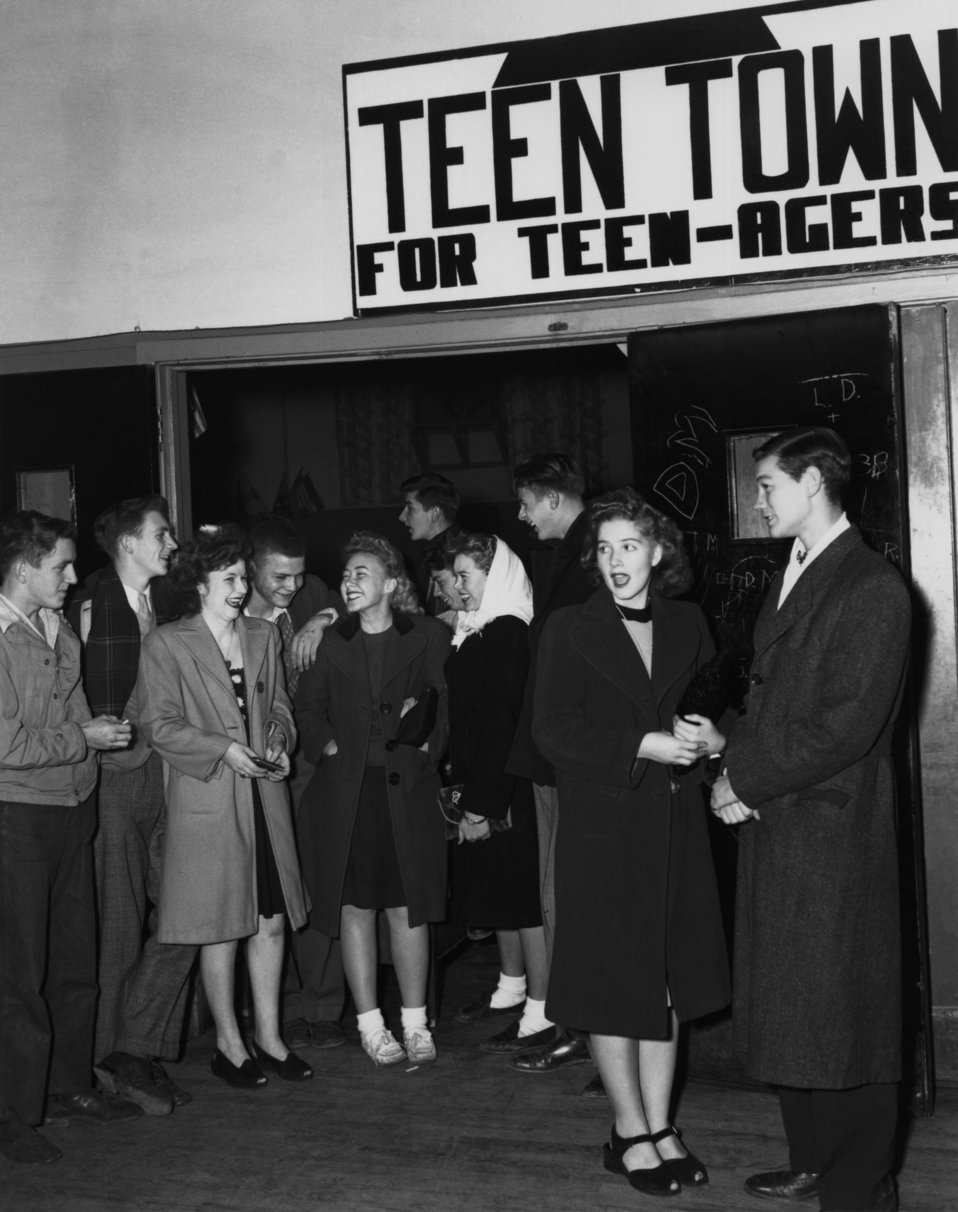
Teen Town Central Recreation Hall Oak Ridge 1945

1284 DOE photo Ed Westcott 11-24-1945 Oak Ridge Tennessee